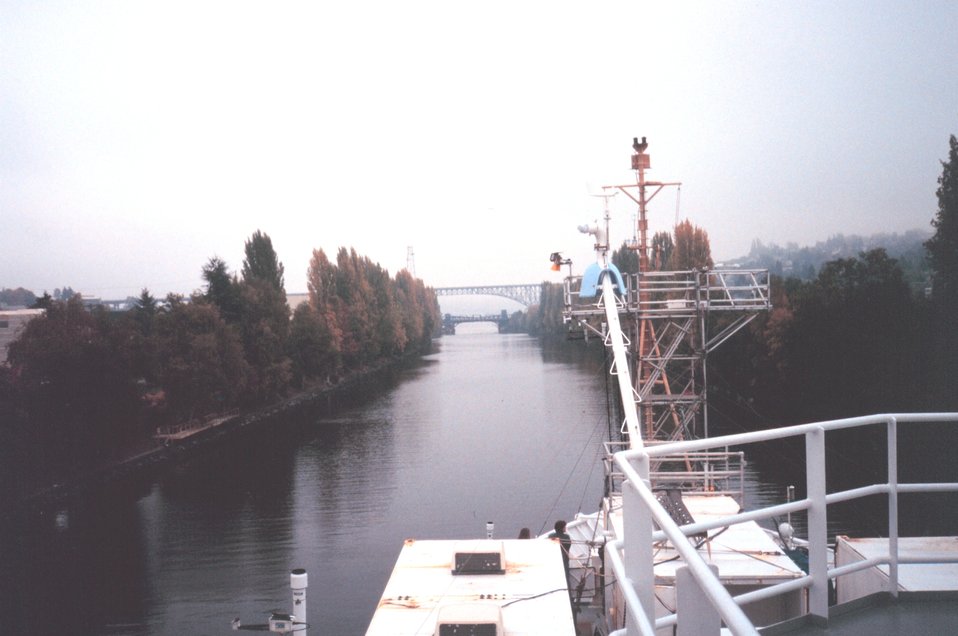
The NOAA Ship RONALD H. BROWN traversing the cut into Lake Union from Puget Sound.